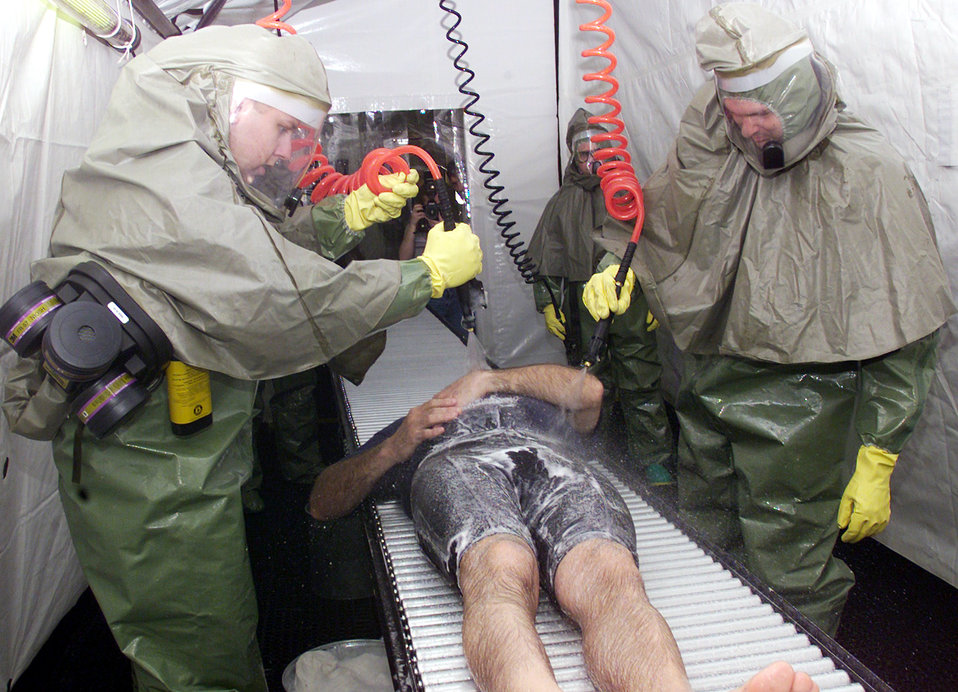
DECON

FORT DETRICK, Md. -- Air Force medical specialists from U.S. bases put the Small Shelter Patient Decontamination System through its paces during a validation test at the Air Force Medical Evaluation Support Activity here March 26. AFMESA workers enhance medical readiness supporting the warfighter by organizing and leading research on technologies that revolutionize military medicine and readiness. They advance the capabilities of military medicine, medical readiness and operational medical support.